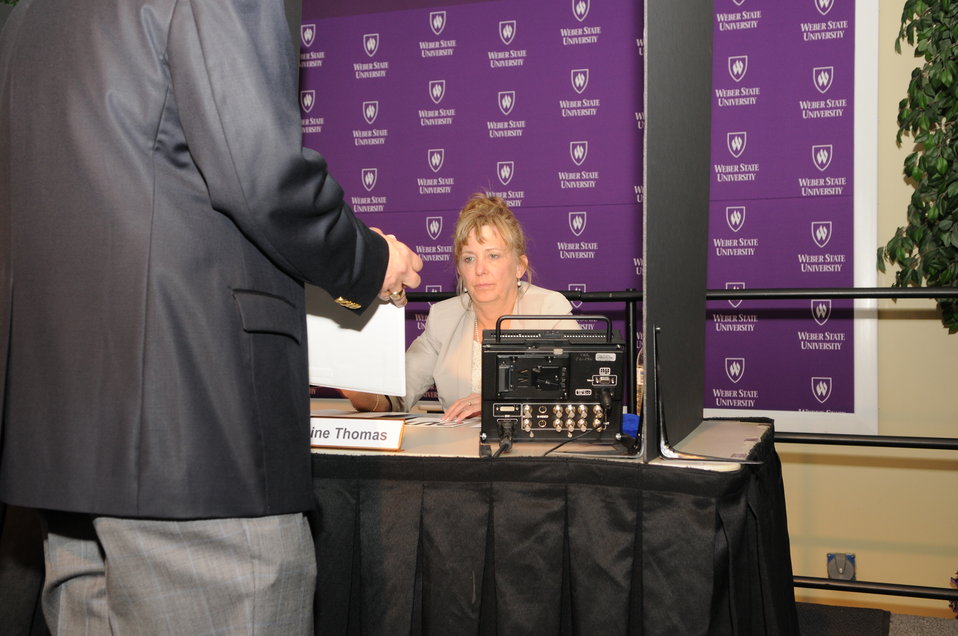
Judging

The U.S. Fish & Wildlife Service sponsored the 2012 Federal Duck Stamp Art Contest September 28 and 29 in Ogden, Utah, at Weber State University. A panel of five judges was responsible for choosing the art work used to design the 2013-2014 Migratory Bird Hunting and Conservation Stamp.